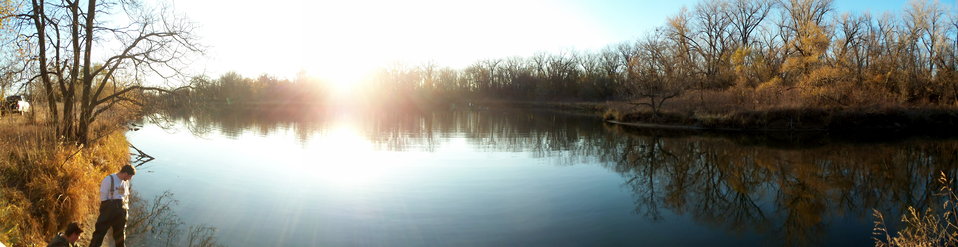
Sunset on the Platte River

Peaceful sunset on a backwaters area of the Platte River near Ashland, Nebraska during during the fall of 2011.

Photo Credits: Jamie Jones / USFWS

Photo Contest Entry #95